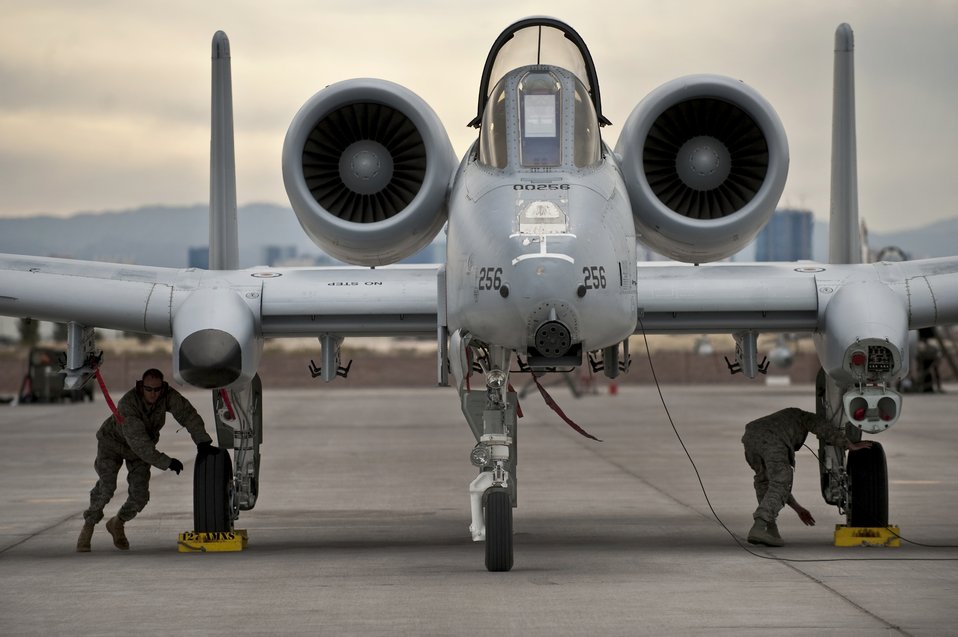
Another successful mission

Crew chiefs assigned to the Michigan Air National Guard's 127th Wing at Selfridge ANG Base, Mich., place wheel chocks under an A-10 Thunderbolt II at Nellis Air Force Base, Nev., March 1, 2011, after a Red Flag training mission.